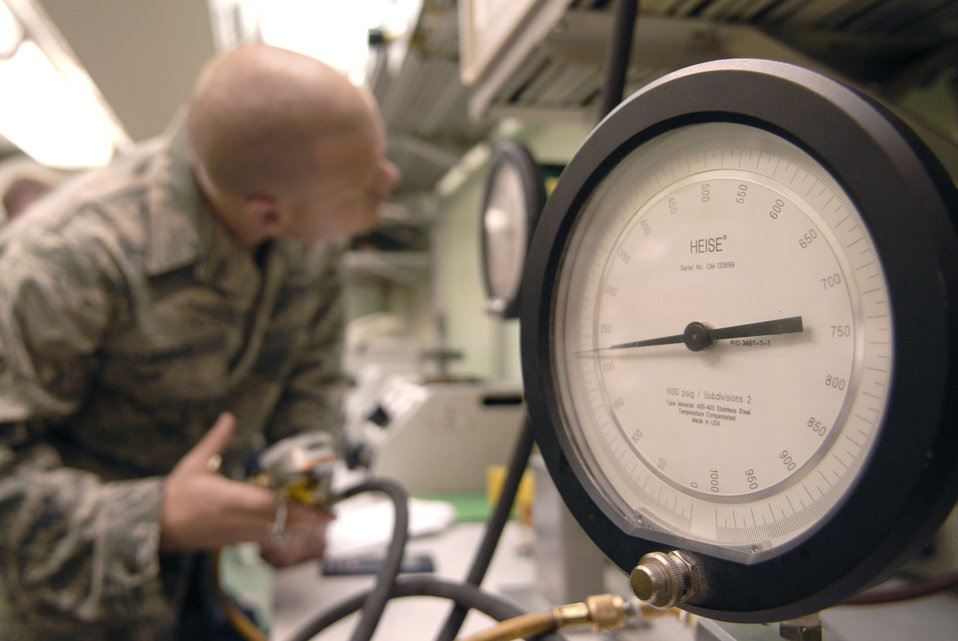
Airmen calibrate for mission success

Staff Sgt. Mason Lucas uses a pressure gauge to check a tire inflator's relief valve June 15 at an air base in Southwest Asia. The tire inflator will be used in a forward operating location in the U.S. Central Command's area of responsibility. The Airmen who work in the Precision Measurement Equipment Laboratory calibrate and test equipment critical to mission accomplishment. Sergeant Lucas is a 379th Expeditionary Maintenance Squadron test measurement diagnostic equipment craftsman. He is a native of Purcellville, Va., and is deployed from Langley Air Force Base, Va.